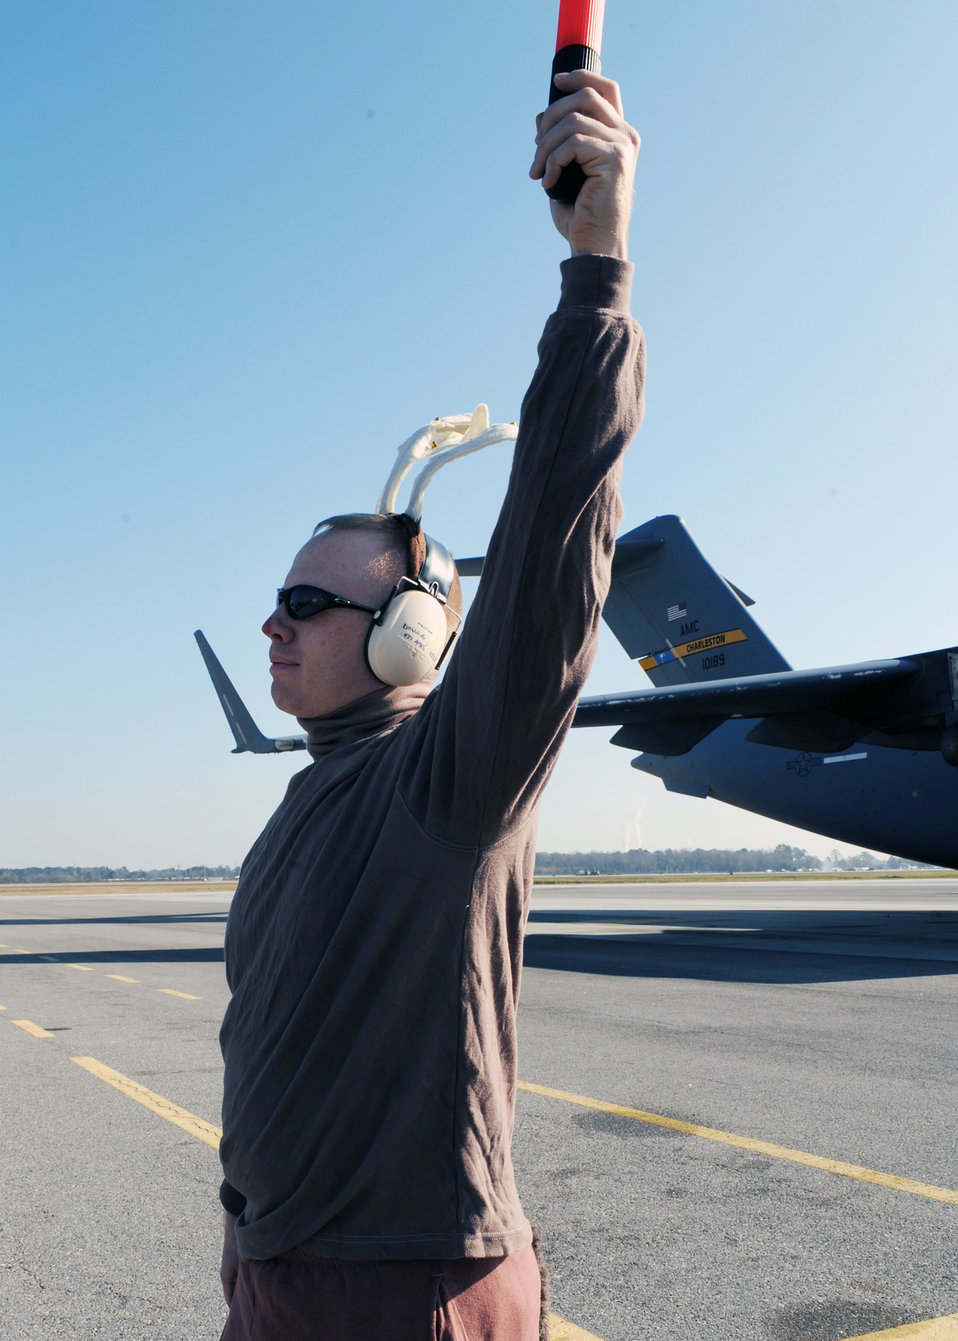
Santa Claus, friends welcome C-17

Reindeer Maj. Jonathan Downing helps Santa direct a C-17 Globemaster III on the flightline at Charleston Air Force Base, S.C., Dec. 22, 2009. The 437th Aircraft Maintenance Squadron voted for Major Downing, who is their commander, to dress up as a reindeer while marshalling an aircraft for a fundraiser.